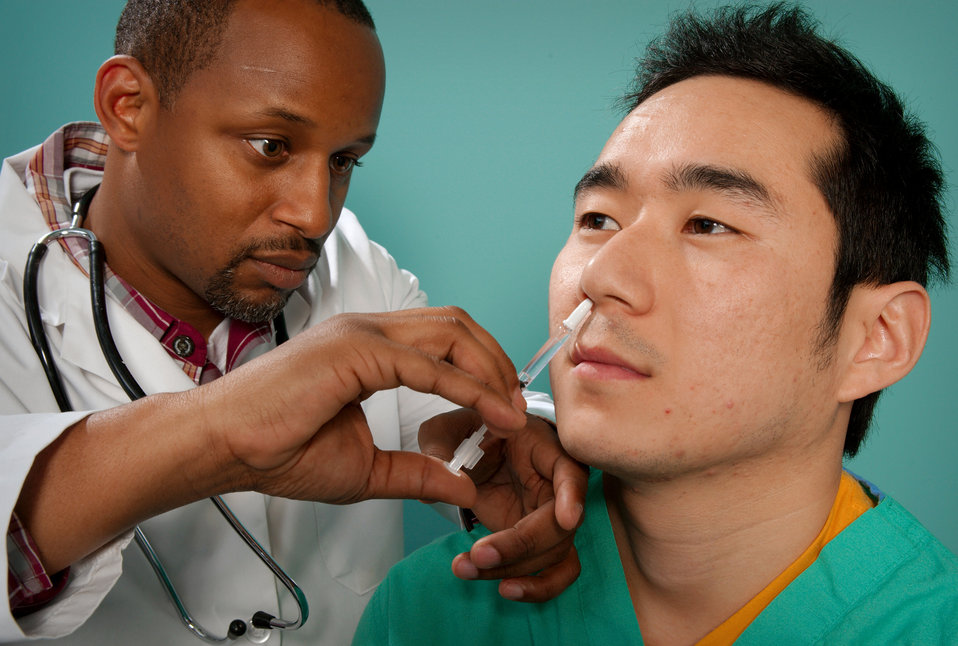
This 2009 image depicts a healthcare practitioner as he was administering the H1N1 live attenuated intranasal vaccine (LAIV) to an Asian man. Using a small syringe, he was delivering the vaccine mist into the man's right nostril.